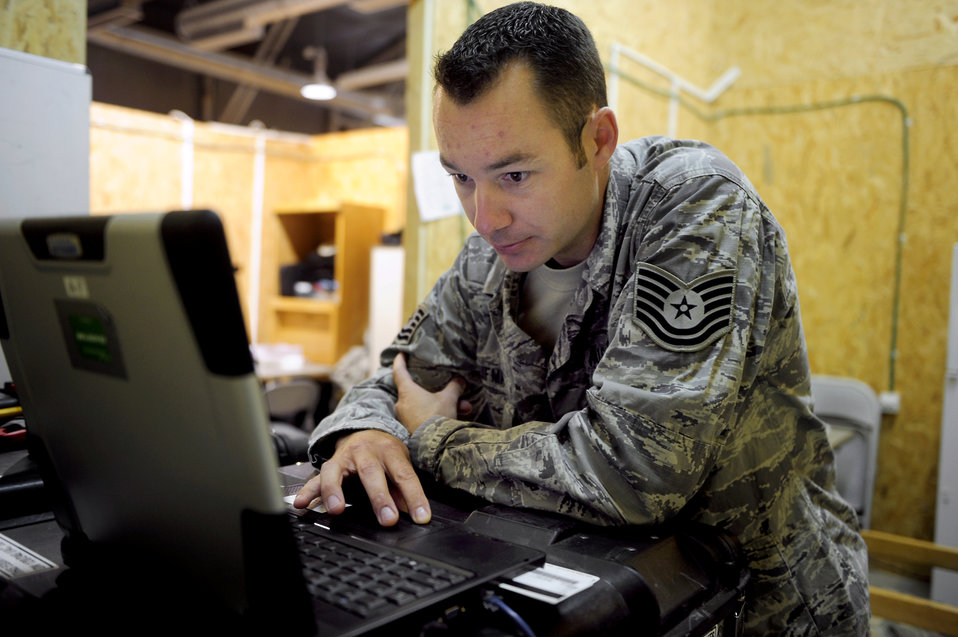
Joint computing

Tech. Sgt. Brian Kauffman completes a system check during Combined Endeavor 2010 at Mihail Kogalniceanu Air Base, Romania, Aug. 30, 2010. Combined Endeavor 2010 is the world's largest communications interoperability exercise. Sergeant Kauffman is a power production technician from the 1st Combat Communication Squadron based in Ramstein, Germany.